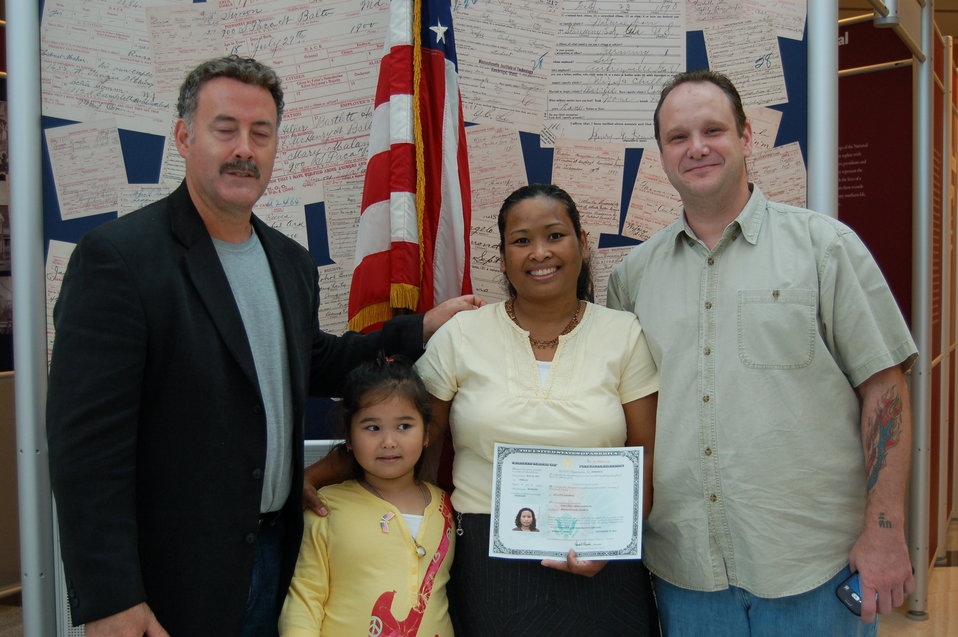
New Citizens